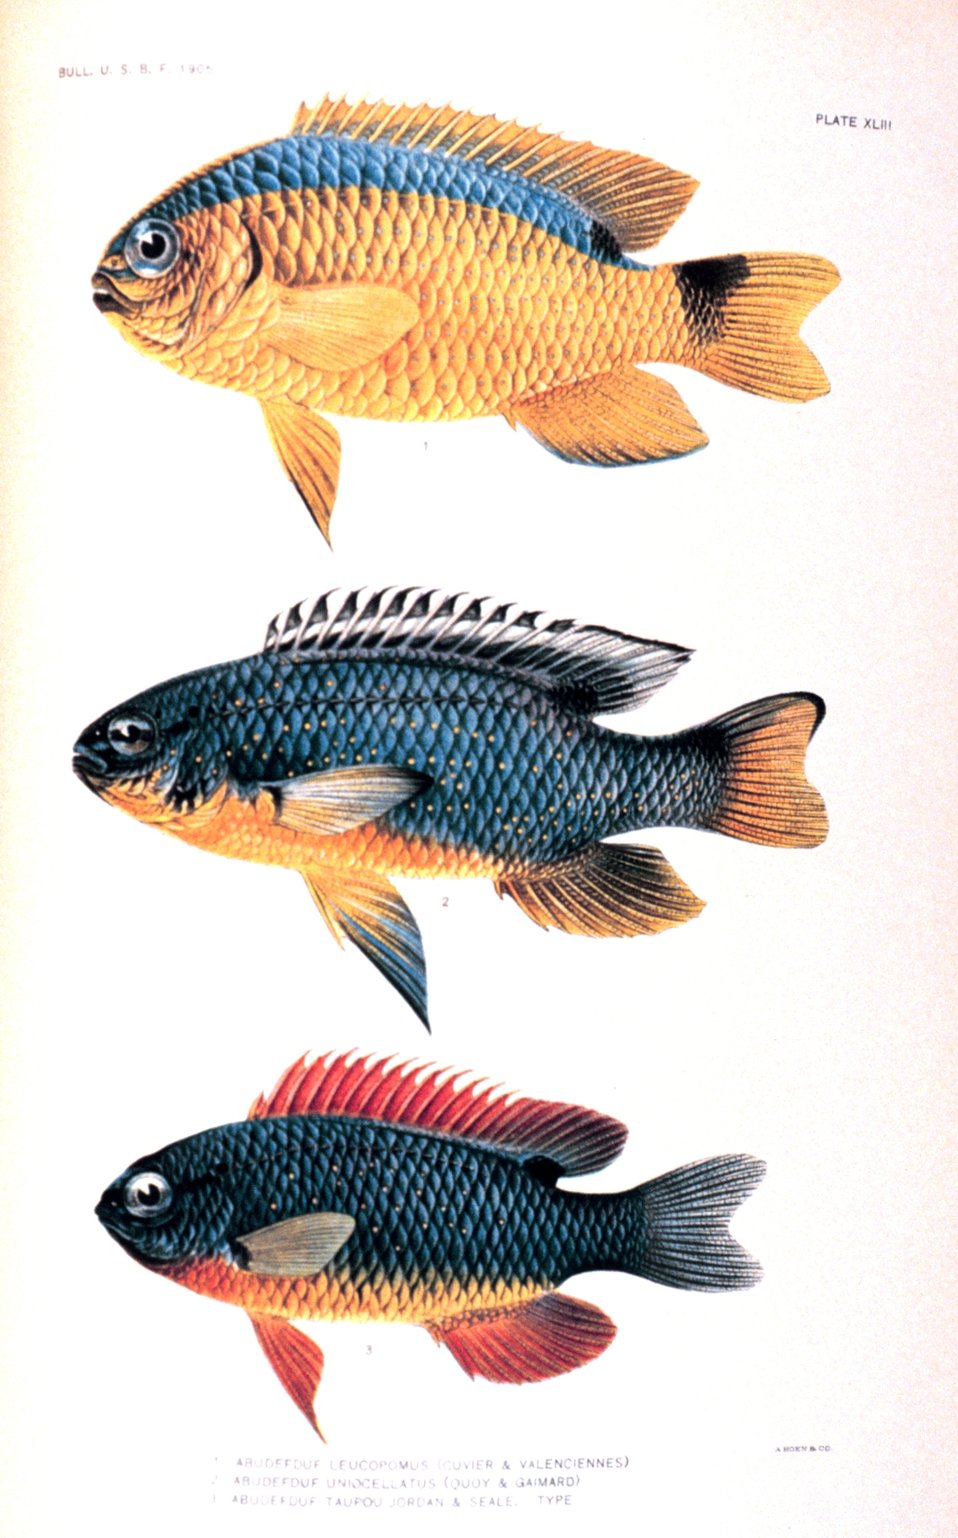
1 Abudefduf leucopomus (Cuvier & Valenciennes) 2 Abudefduf uniocellatus (Quoy & Gaimard) 3 Abudefduf taupou Jordan & Seale. Type. In: 'The Fishes of Samoa', by David Starr Jordan and Alvin Seale. Bulletin of the United States Fish Commission, Vol. 25, 1905. P. 455, Plate XLIII.